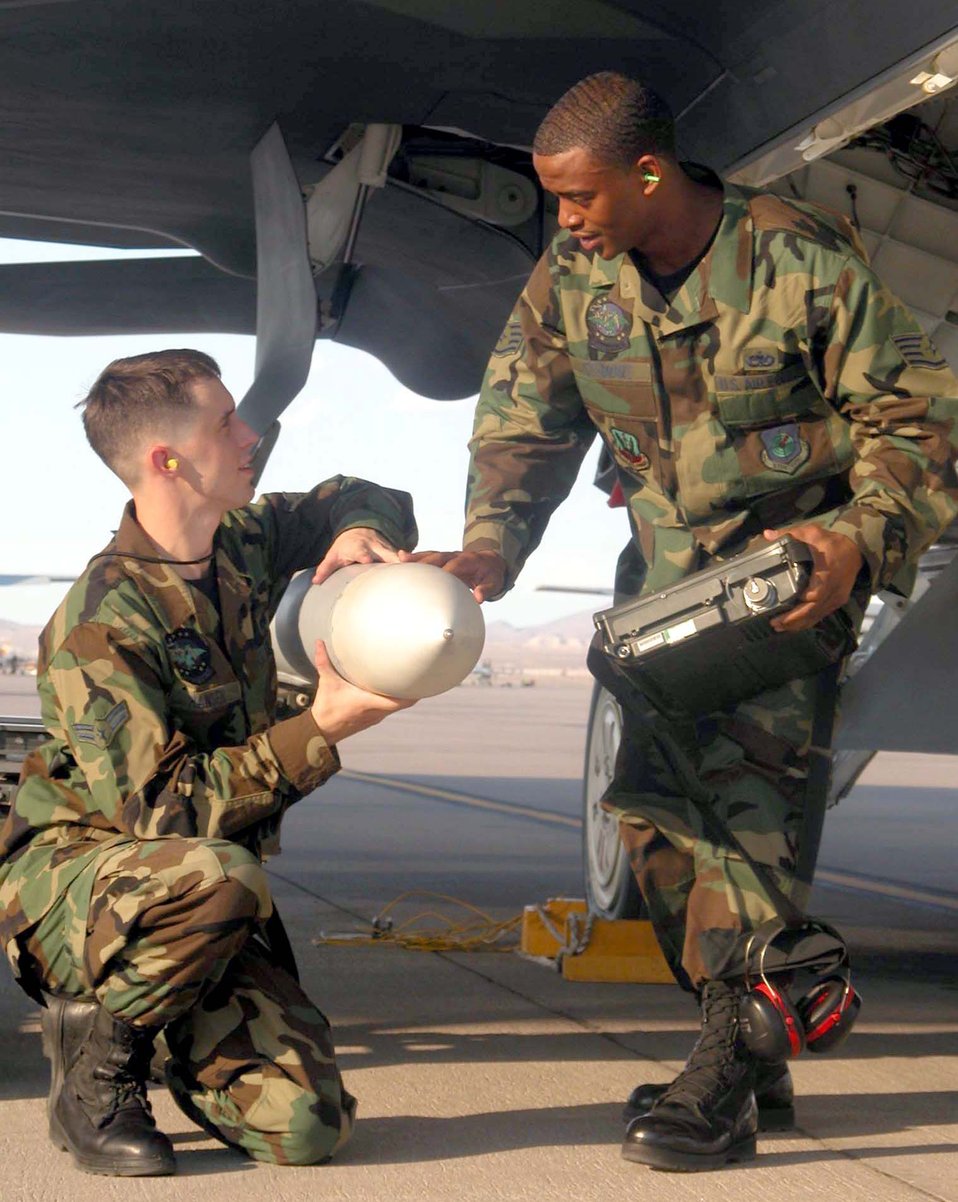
Raptor loading

NELLIS AIR FORCE BASE, Nev. (AFPN) -- Staff Sgt. Camden Stewart (right) trains Airman 1st Class Brian Hansen on the proper way to prepare an AIM-120 for loading onto an F/A-22 Raptor here. Nellis recently became the first base in Air Combat Command to have certified F/A-22 weapons load crews. Sergeant Stewart is a weapons load crew chief for the 57th Aircraft Maintenance Squadron. Airman Hansen is a weapons loader for the squadron.